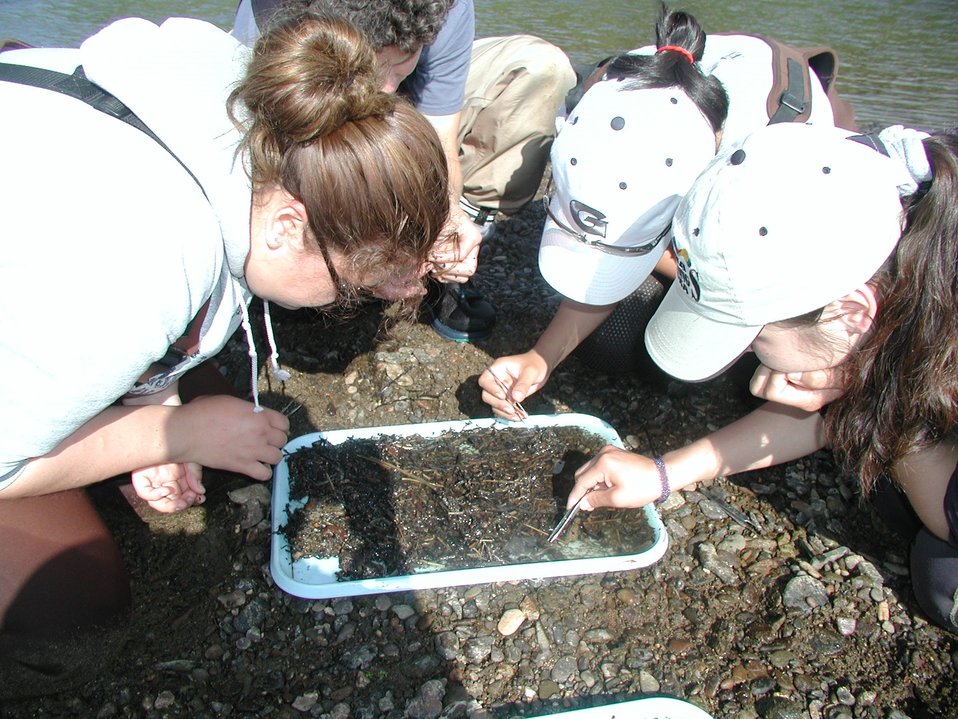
Students Inventoring Aquatic Insects

USFWS Yukon Delta NWR